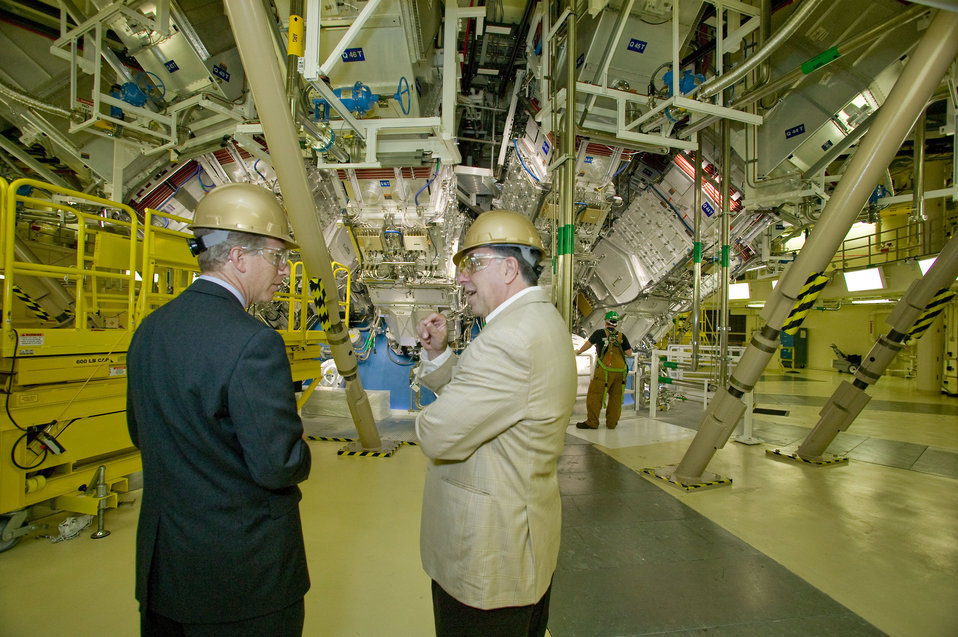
Deputy Secretary of Energy Daniel Poneman

Left to right, Adam Cohen, Tomas De La Rubia, Alice Williams, Daniel
Poneman, George Miller, Phil Hill, Bruce Goodwin